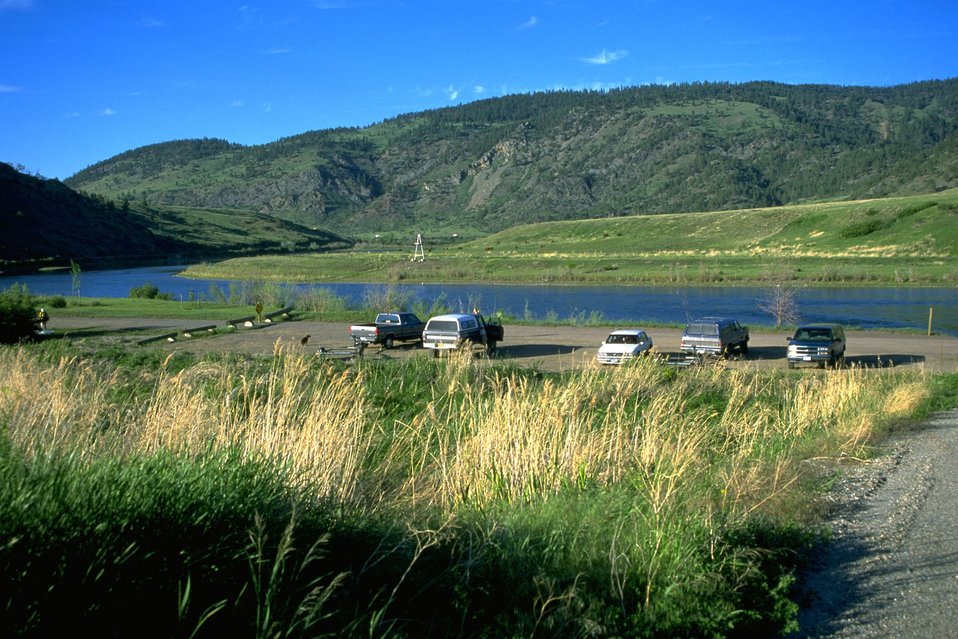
The parking lot at Holter Dam Day Use Area